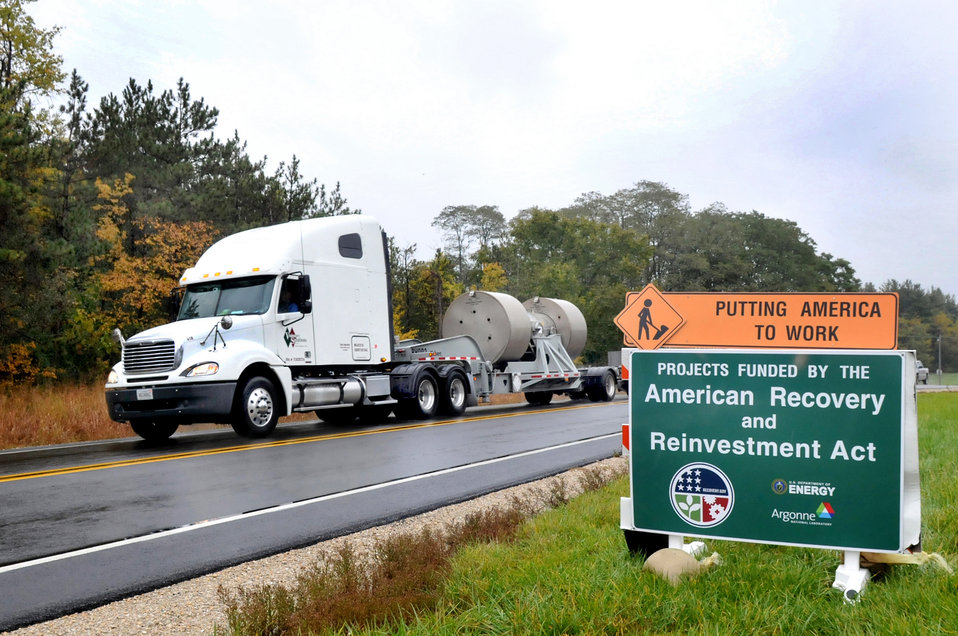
Argonne shipment

A transuranic waste shipment leaves Argonne National Laboratory, en route to the Waste Isolation Pilot Plant in New Mexico.